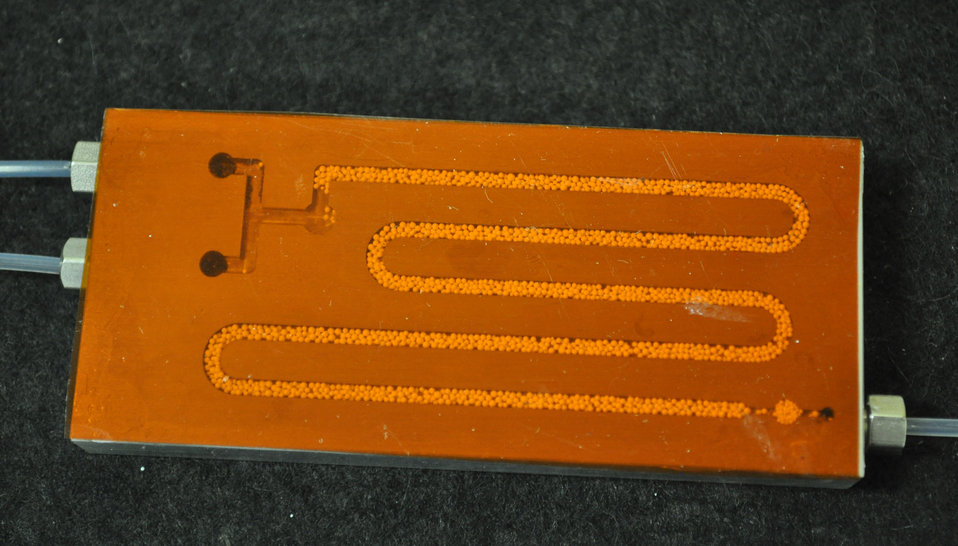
Micoreactor plate

Typical NIST microreactor plate for studying enzyme catalyzed polymerization. The aluminum plate, topped with a transparent film, is approximately 40 mm by 90 mm centimeters. The channel, filled with plastic beads carrying the enzyme catalyst, is 2 millimeters wide and 1 deep.